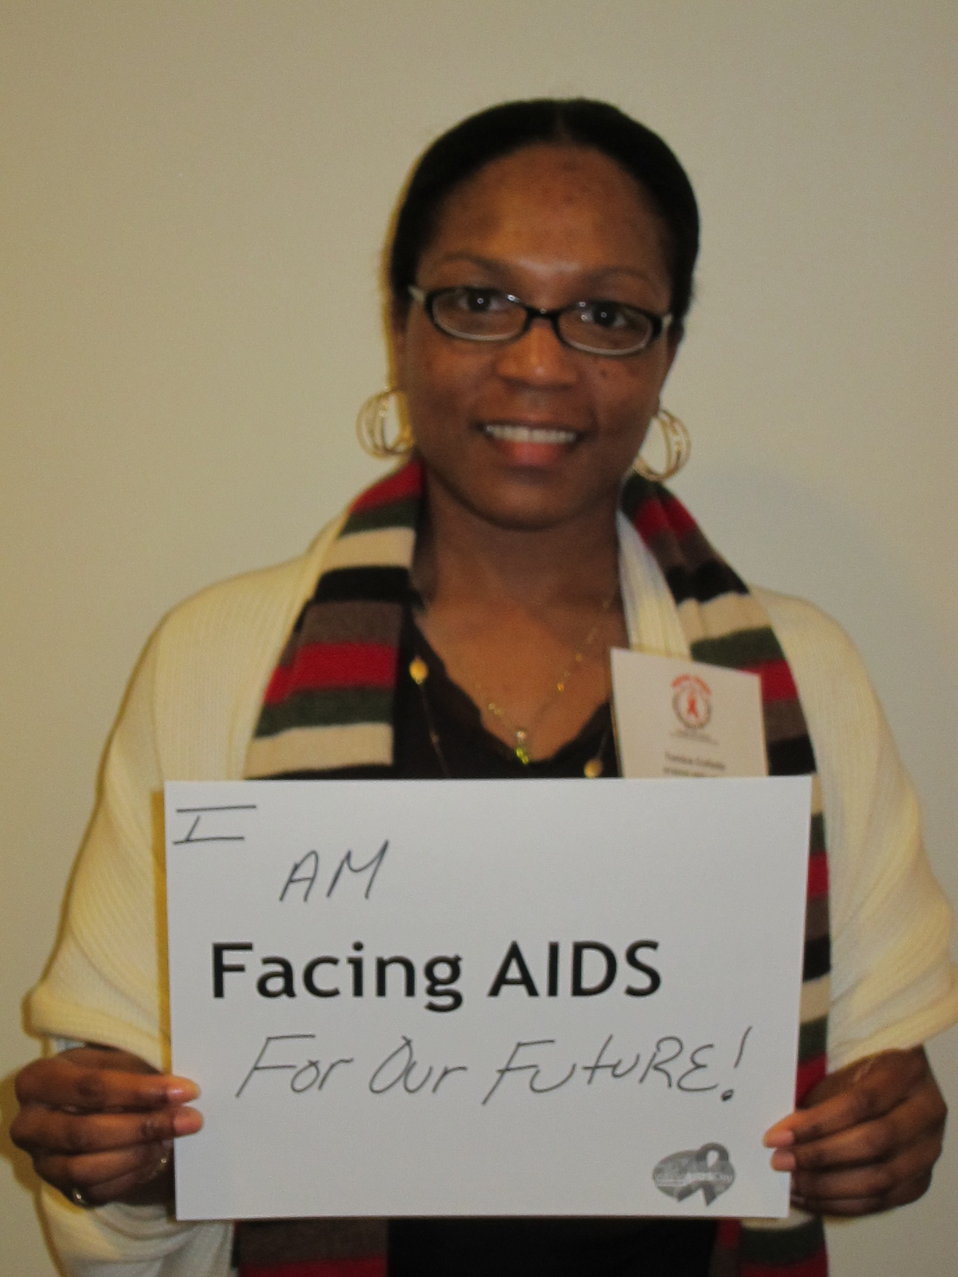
I am Facing AIDS for our future!